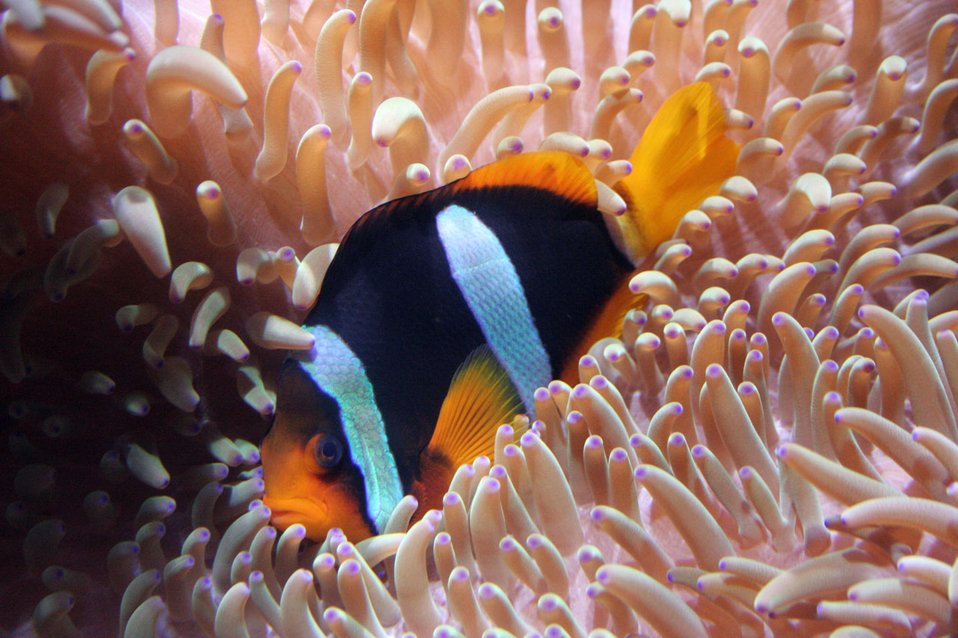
Clown fish in hull aquarium.